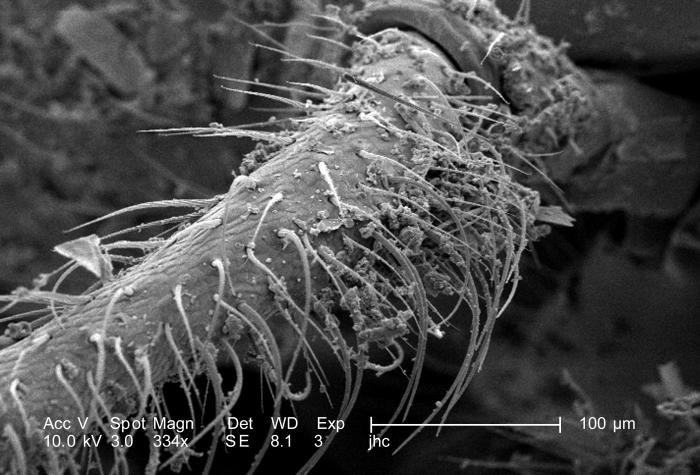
Under a moderate magnification of 334X, this scanning electron micrograph (SEM) revealed some of the exoskeletal ultrastructural morphology of an unidentified debris-laden insect, which had been discovered deceased in the suburbs of Decatur, Georgia. Depicted in this particular image was a section of one of the insect's six legs, which emanated from its thoracic region, located between its head and abdominal regions. The scattered particulate matter adorning the insect's exoskeletal surface was merely environmental debris common to its habitat. The fact that this organism maneuvered about on jointed legs, placed it into the Phylum Arthropoda, i.e., Arthro